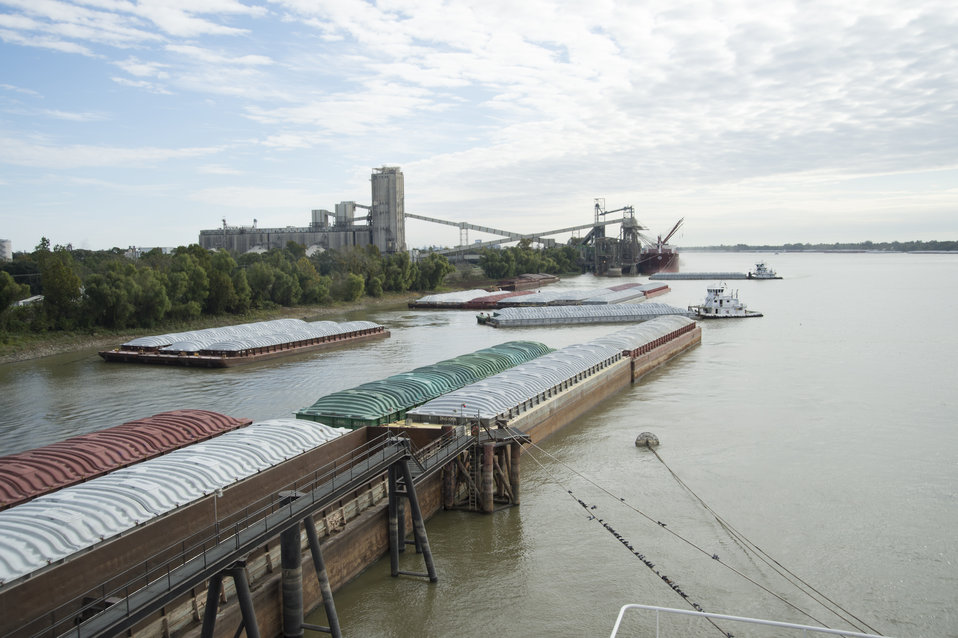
Barges are lined up waiting to transfer grain to storage facilities near the Port of New Orleans in New Orleans, LA on Tuesday, Nov. 19, 2013.